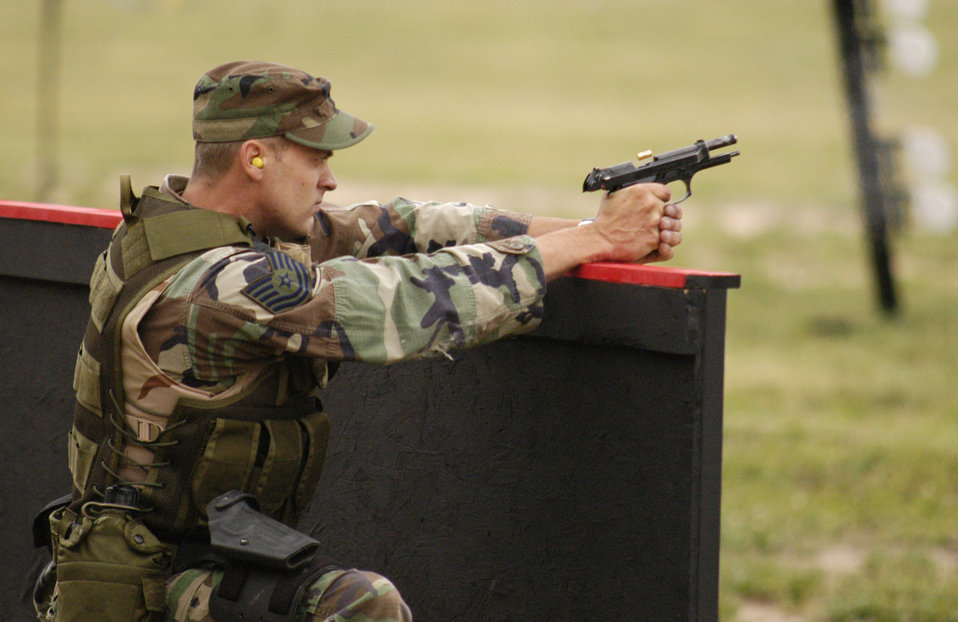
Guardian Challenge

Tech. Sgt. Brian Johnson fires at targets during the Guardian Challenge marksmanship competition at the U.S. Air Force Academy, Colo., on Aug. 15. Sergeant Johnson is the 50th Security Forces Squadron team leader at Schriever Air Force Base, Colo.